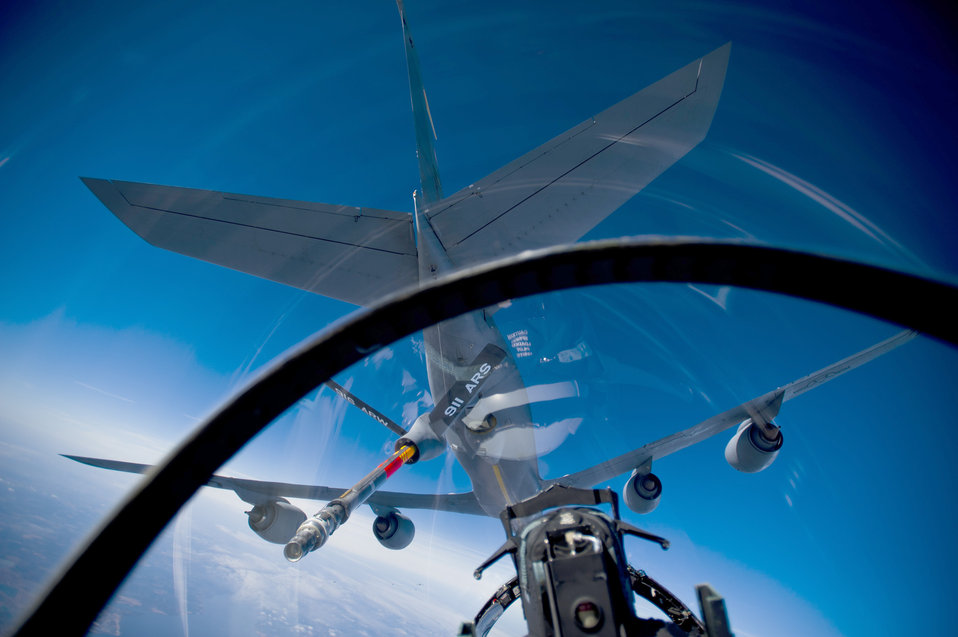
F-15s training mission

From the pilot's viewpoint, an F-15E Strike Eagle positions under the boom of a KC-135R Stratotanker during a training mission Dec. 17, 2010, over North Carolina. The F-15E is from the 335th Fighter Squadron from Seymour Johnson Air Force Base, N.C.